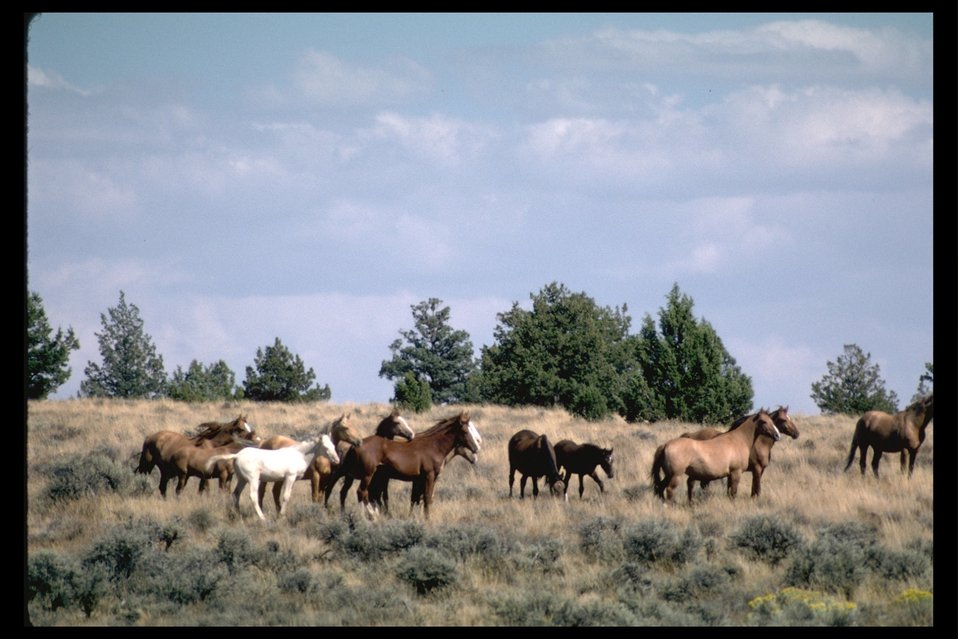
Wild horses in the Palomino Buttes HMA.